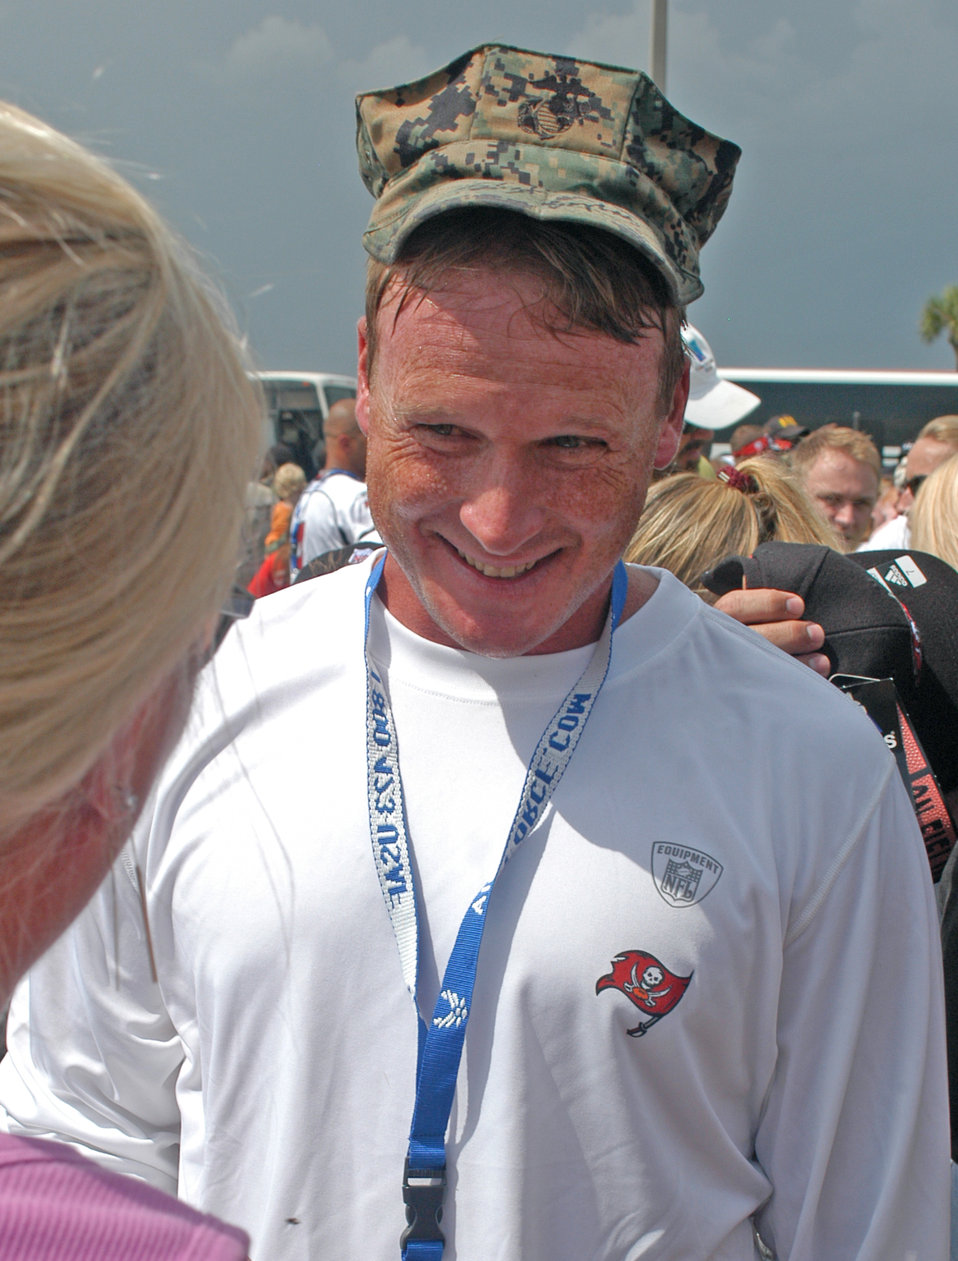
Tampa Bay plays at MacDill

Buccaneers Head Coach Jon Gruden signs an autograph for a fan after the pre-game, walkthrough practice held at MacDill Air Force Base, Fla., on Aug. 18. The practice was closed to the general public but open to base personnel.